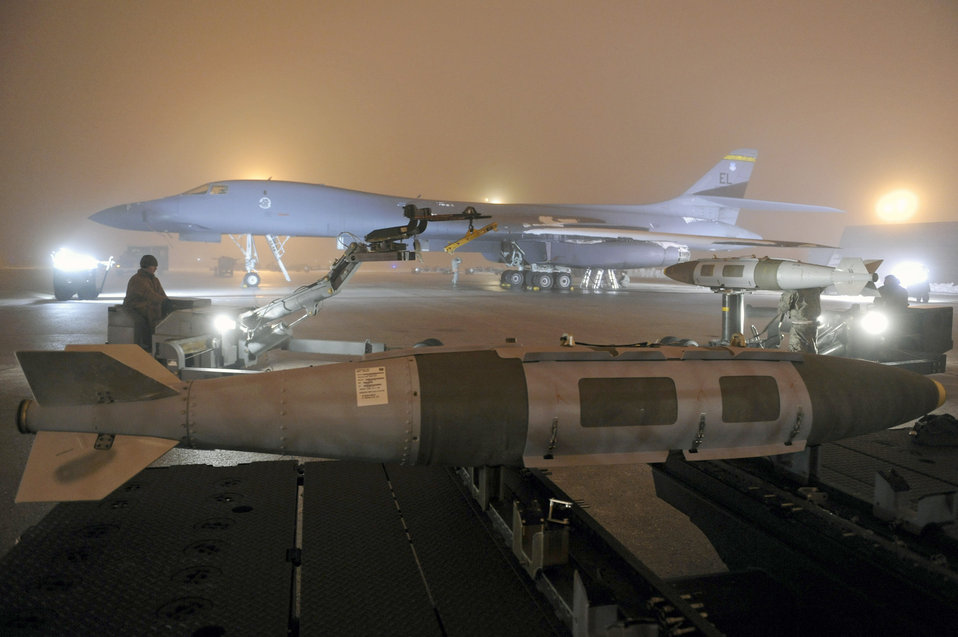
Preparing B-1B for mission

Airmen from the 28th Aircraft Maintenance Squadron at Ellsworth Air Force Base, S.D., prepare a B-1B Lancer March 27, 2011, for a mission in support of Operation Odyssey Dawn.